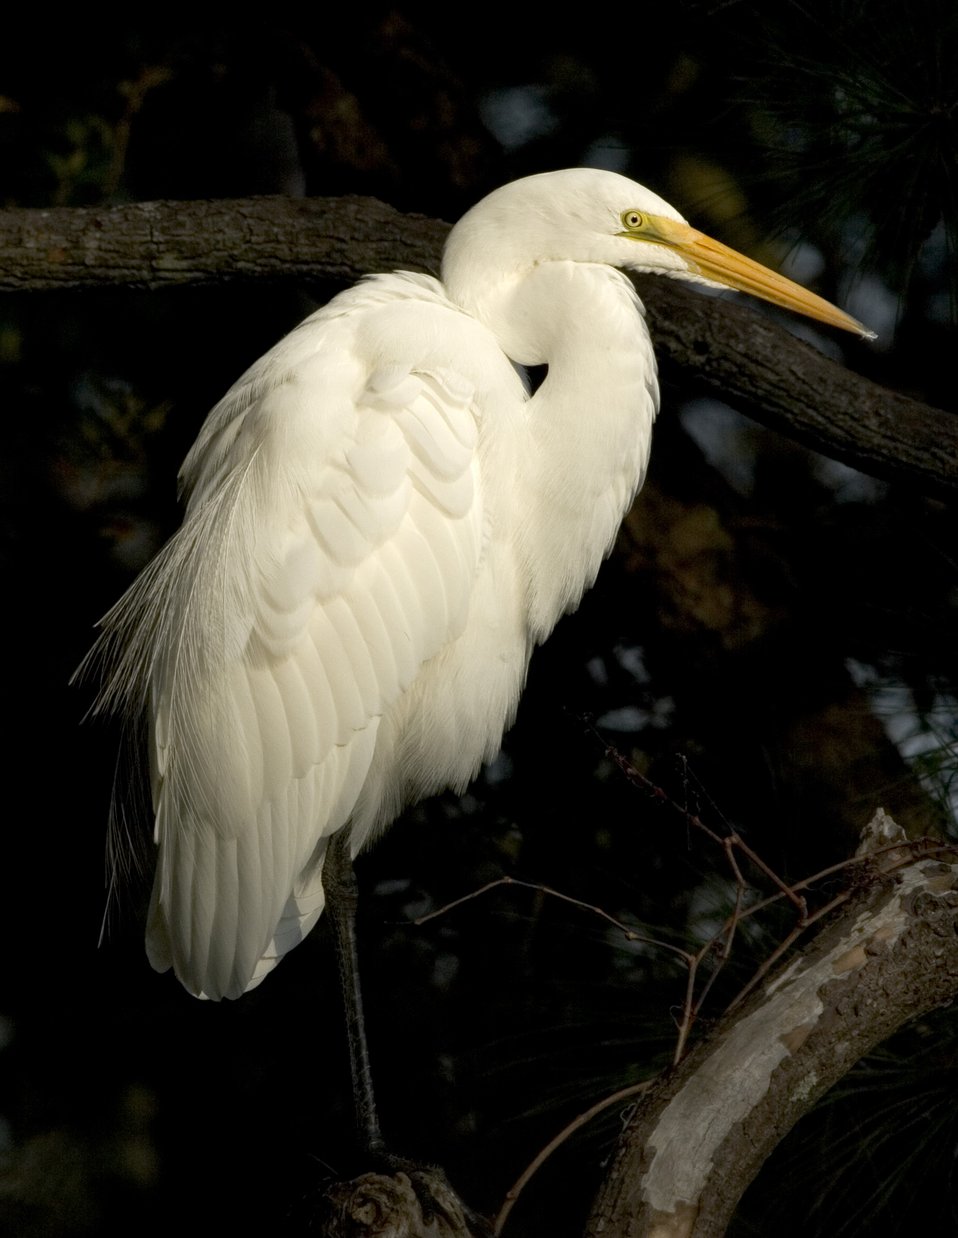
Great egret.